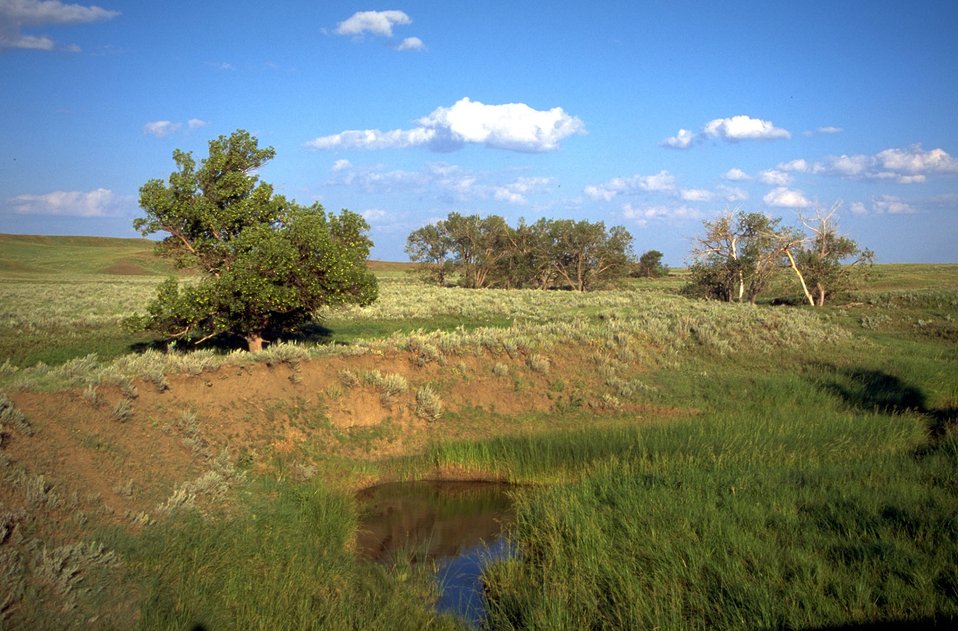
Moreau River near the Harding County line